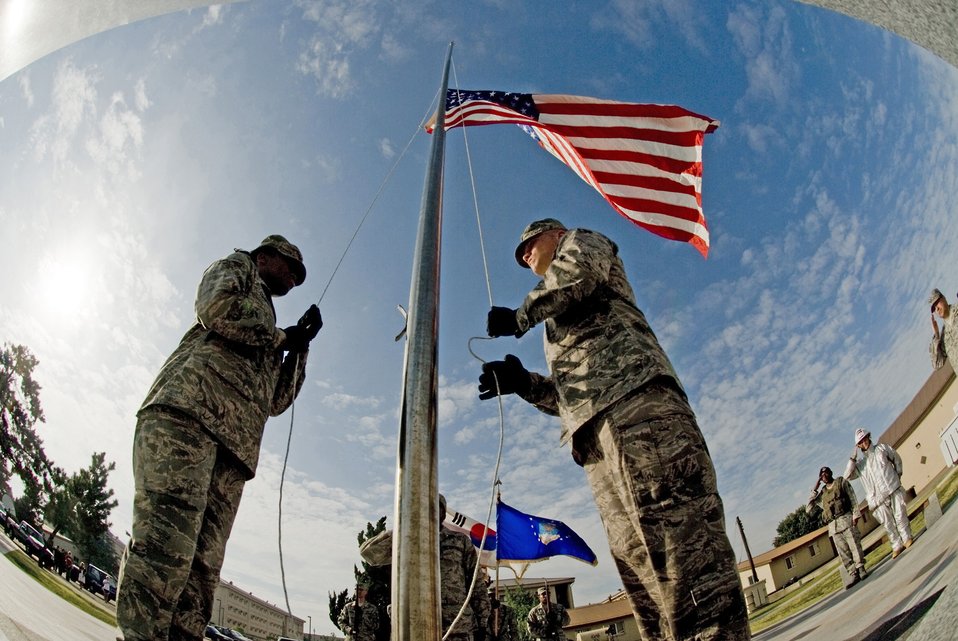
Never forget

Senior Airman Danielle Todman and Airman 1st Class Kyle Detwiler post the colors during the 9/11 Patriot Day Ceremony on Sept. 11, 2009, at Kunsan Air Base, South Korea. The ceremony acknowledged the courageous first responders and others who risked their lives to save the victims of Sept. 11, 2001, and servicemembers who have joined the military since these events.